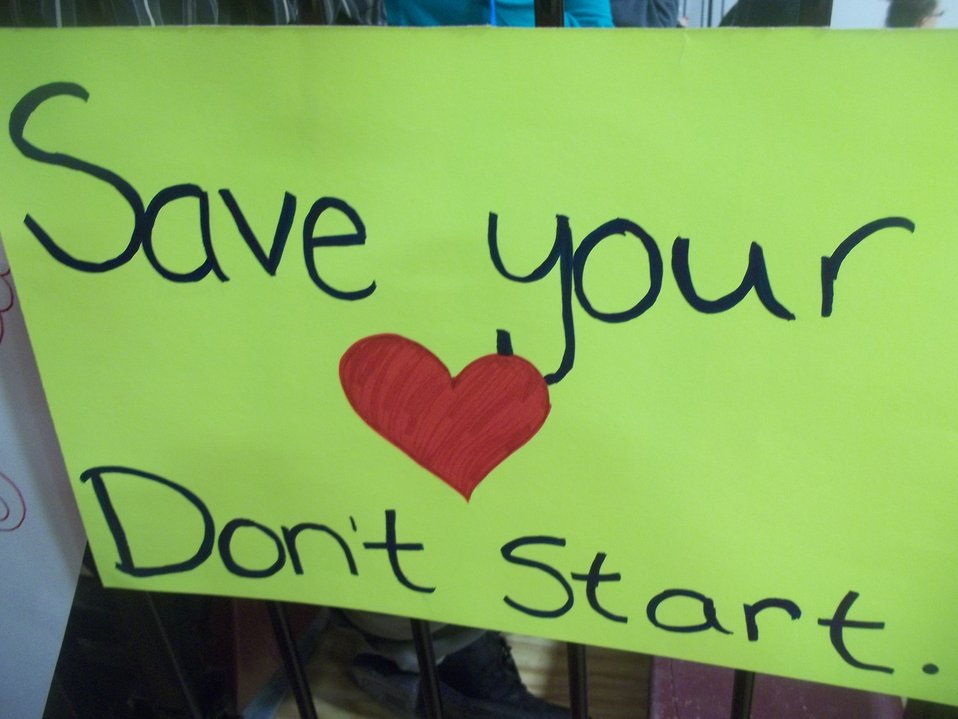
Lisbon, Maine's NDFW 2013

Lisbon, Me. Students from Lisbon High School SADD group held NDFW Event during halftime show, displaying posters, 'Shatter the Myths' books and stickers.